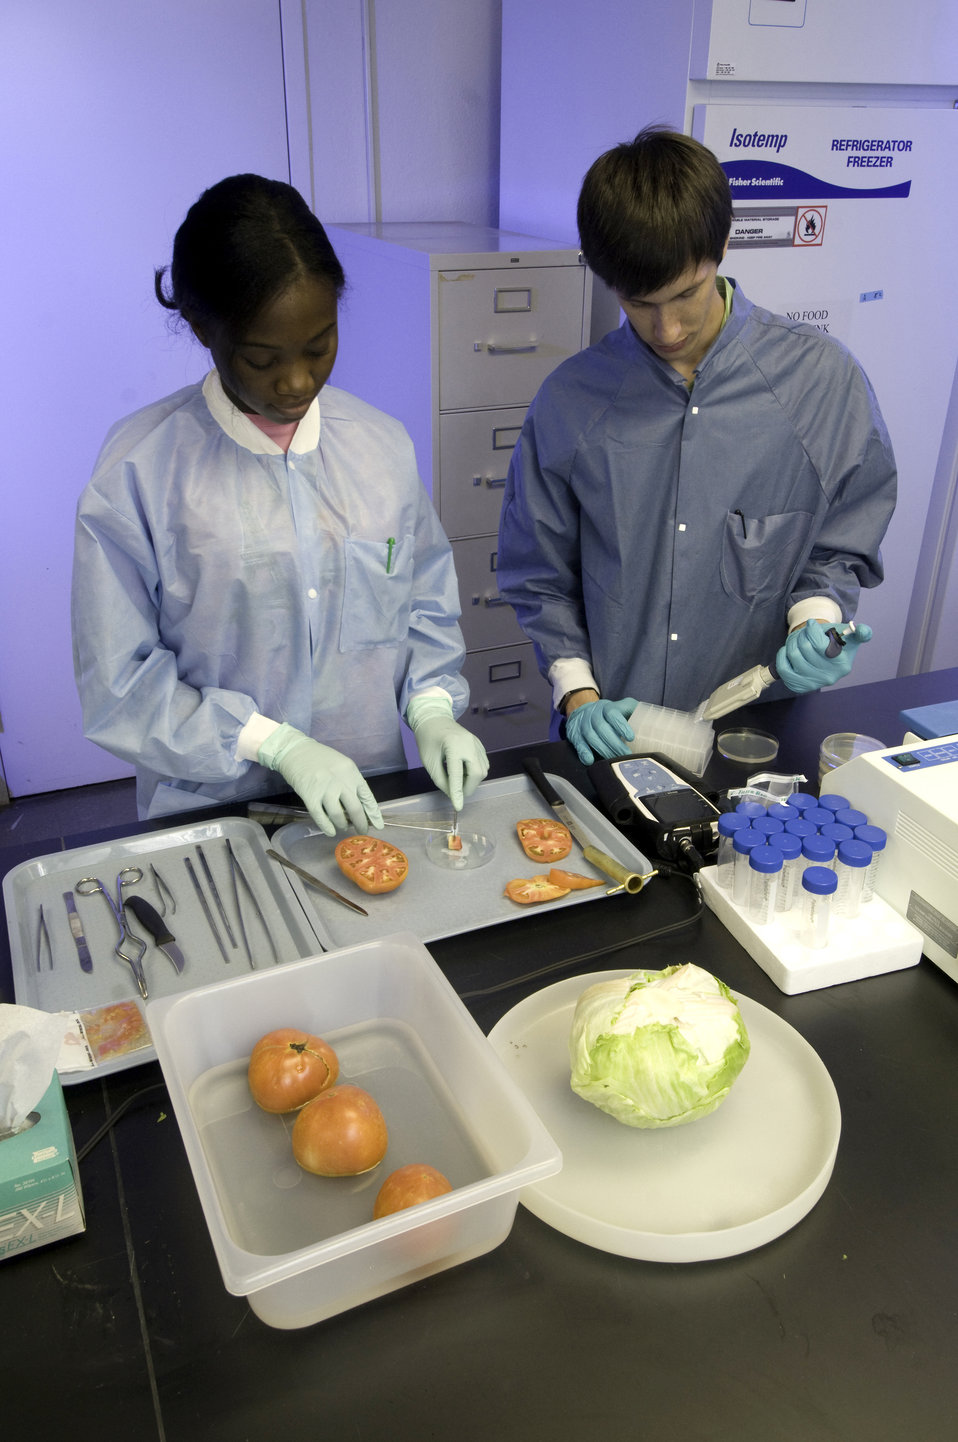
Graduate student intern, University of Maryland Food Science/Food Safety major Ruth Oni and junior intern, University of Maryland Food Safety major Yitzy Paul observe the internalization of salmonella in tomatoes while working in the Produce Quality and Safety Laboratory at the U.S. Department of Agriculture's (USDA) Agricultural Research Service (ARS), Beltsville Agricultural Research Center in Beltsville Maryland, Wednesday, July 28, 2010.